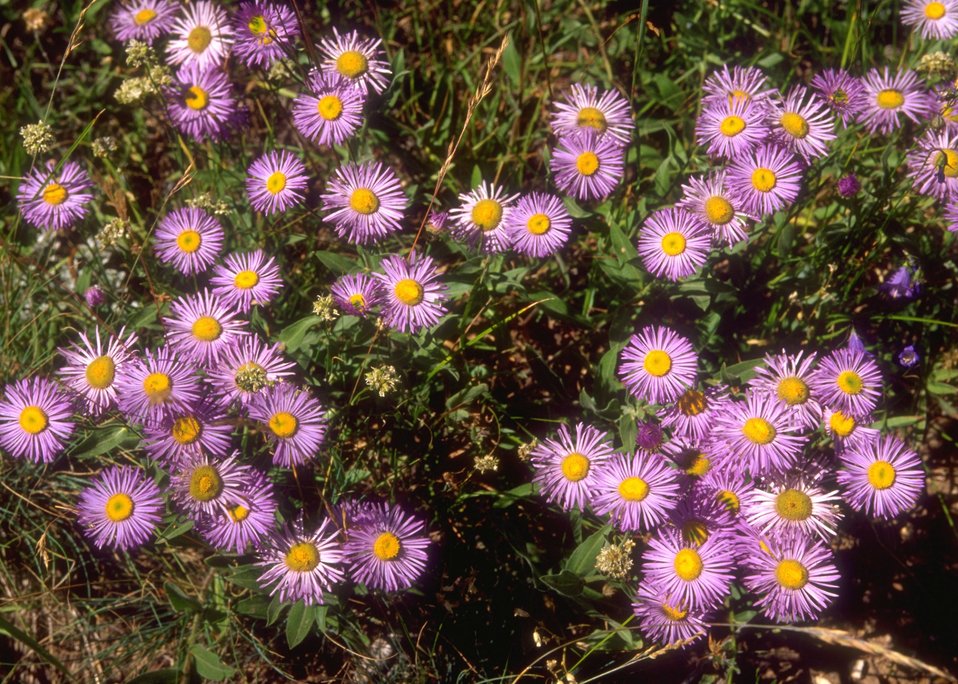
Flowers at Muddy Mountain Recreation Area, Casper Field Office.